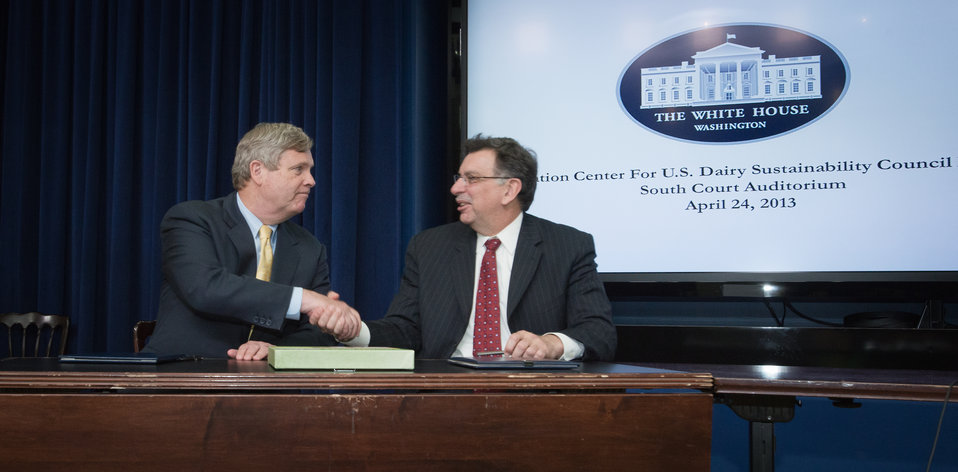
Agriculture Secretary Tom Vilsack and Innovation Center for U.S. Dairy Chief Executive Officer (CEO) Tom Gallagher shake hands after they sign a Memorandum of Understanding (MOU) at the Innovation Center For U.S. Dairy Sustainability Council Meeting on Wednesday, Apr. 24, 2013, at the White House, Washington, D.C. The objectives of the MOU are to increase the construction of anaerobic digesters and explore innovative ways to use products previously considered waste streams from dairy production, processing and handling.